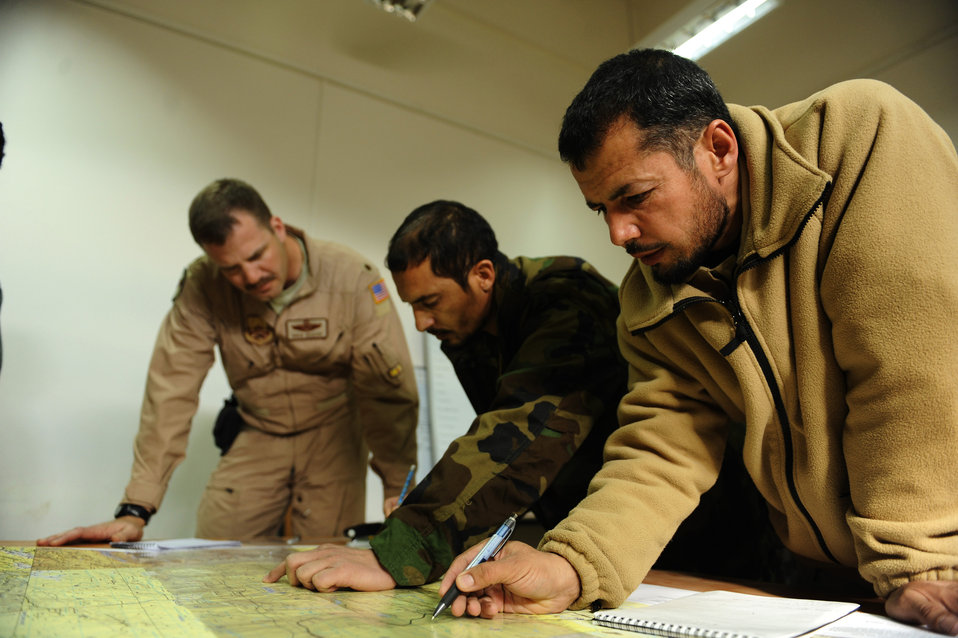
Afghan Mi-17 Pilot Training

Afghan air force Mi-17 pilots complete practice problems during a mission planning class taught by Maj. Drew Grigson, Jan. 9, 2011, at Shindand Air Base, Afghanistan. The Afghan pilots are learning the skills necessary to become aircraft commanders. Major Grigson is from the 444th Air Expeditionary Advisory Squadron.